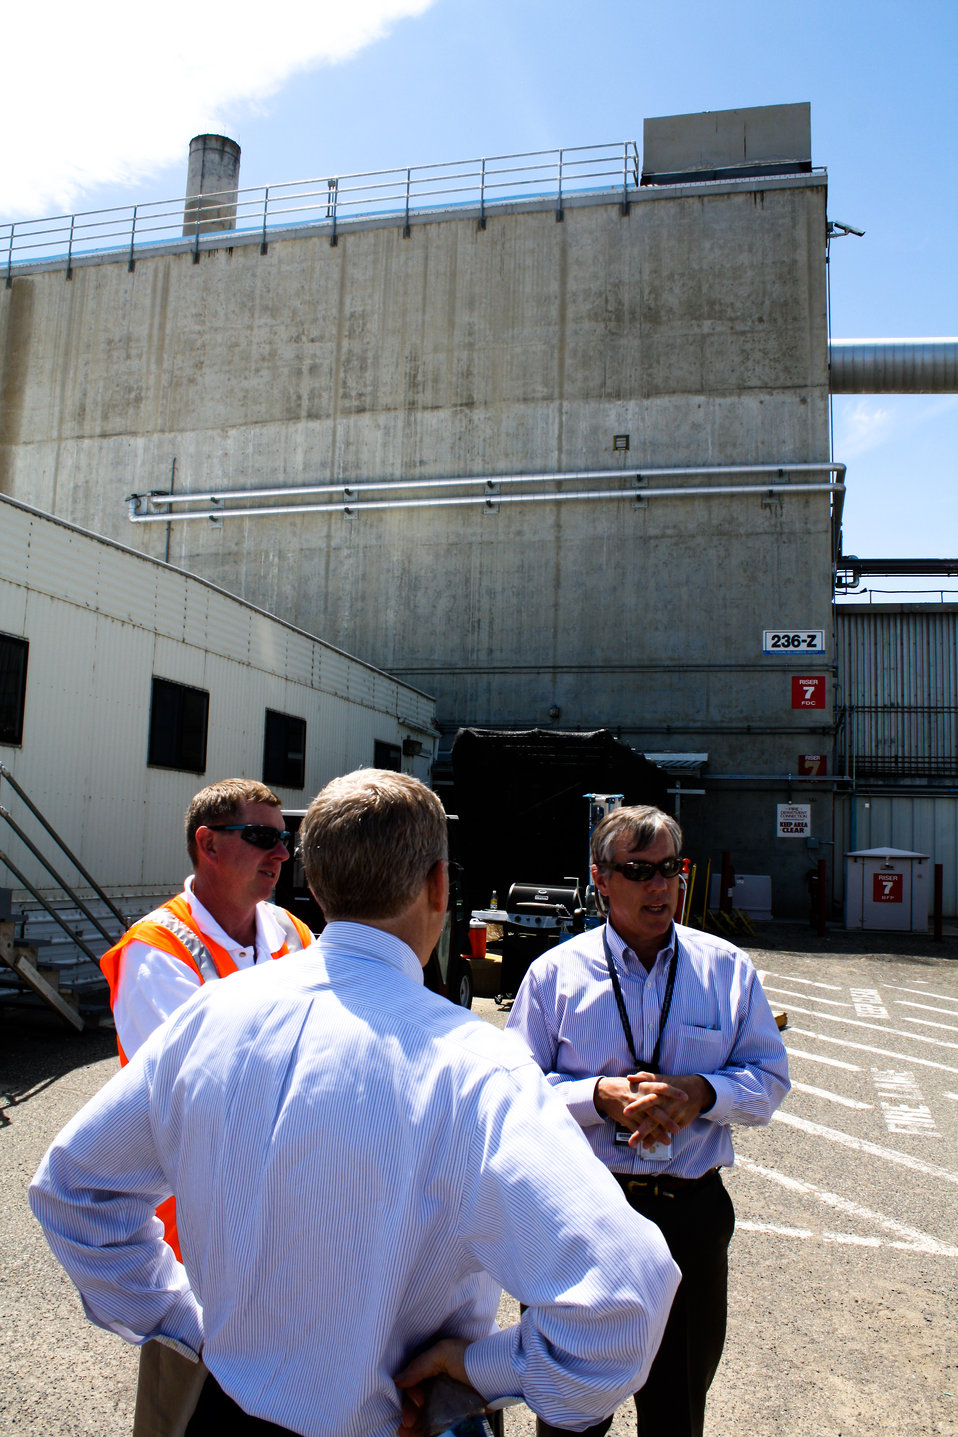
Poneman Vit Plant Visit 06-14-10-163